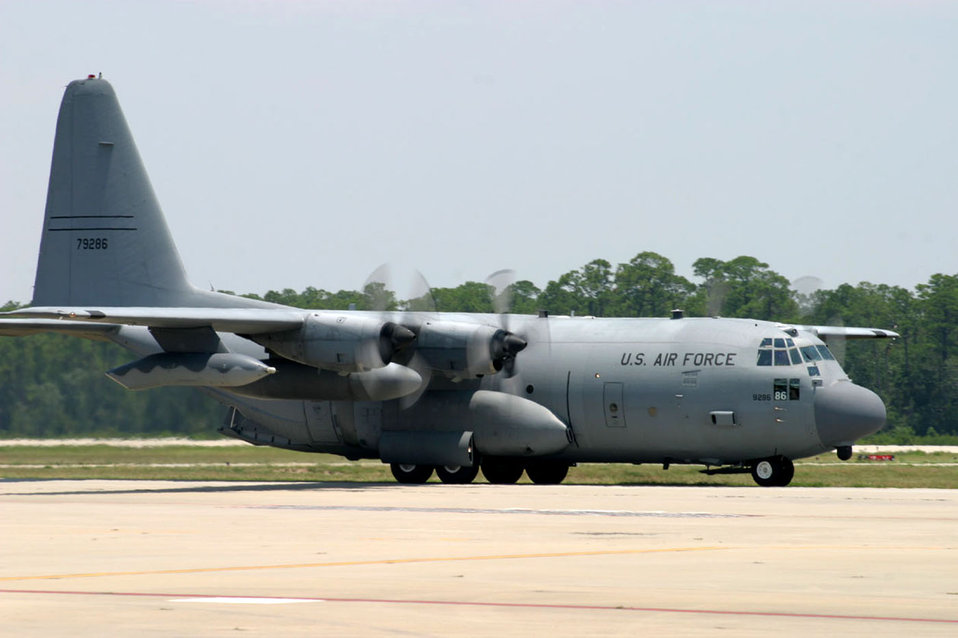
MC-130W Combat Spear

An MC-130W Combat Spear taxis down the Hurlburt Field, Fla., runway. The aircraft's mission is to conduct infiltration, exfiltration and resupply of U.S. and allied special operations forces.